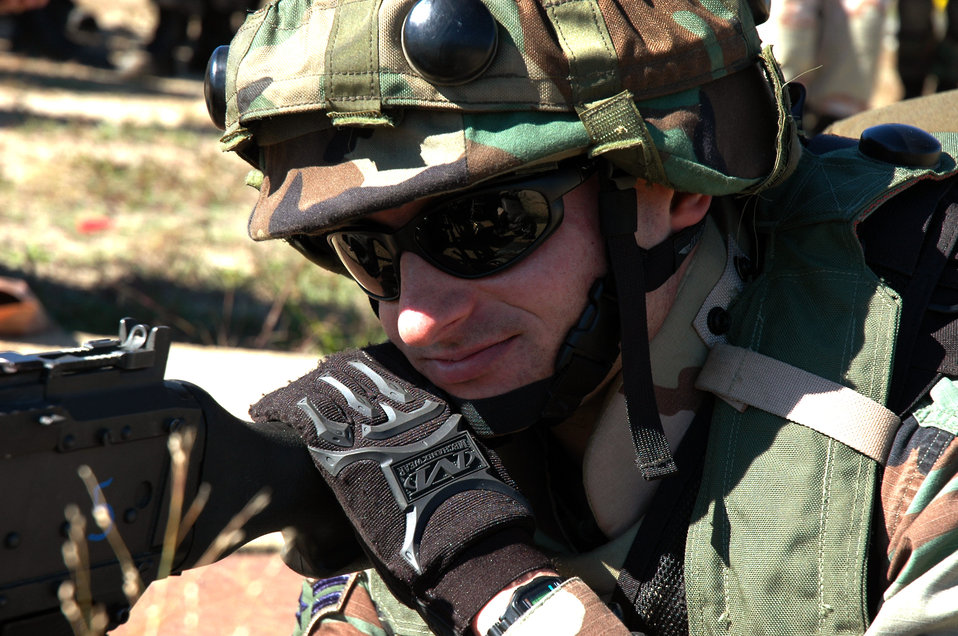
Eagle Flag preps Airmen for combat

Airman 1st Class Travis Fillman watches over an entry control point with an M-60 machine gun as part of operations for Air Force Exercise Eagle Flag 07-1 Oct. 13 at Naval Air Engineering Station Lakehurst, N.J. Airman Fillman is a security forces journeyman from the 817th Contingency Response Group, McGuire AFB, N.J